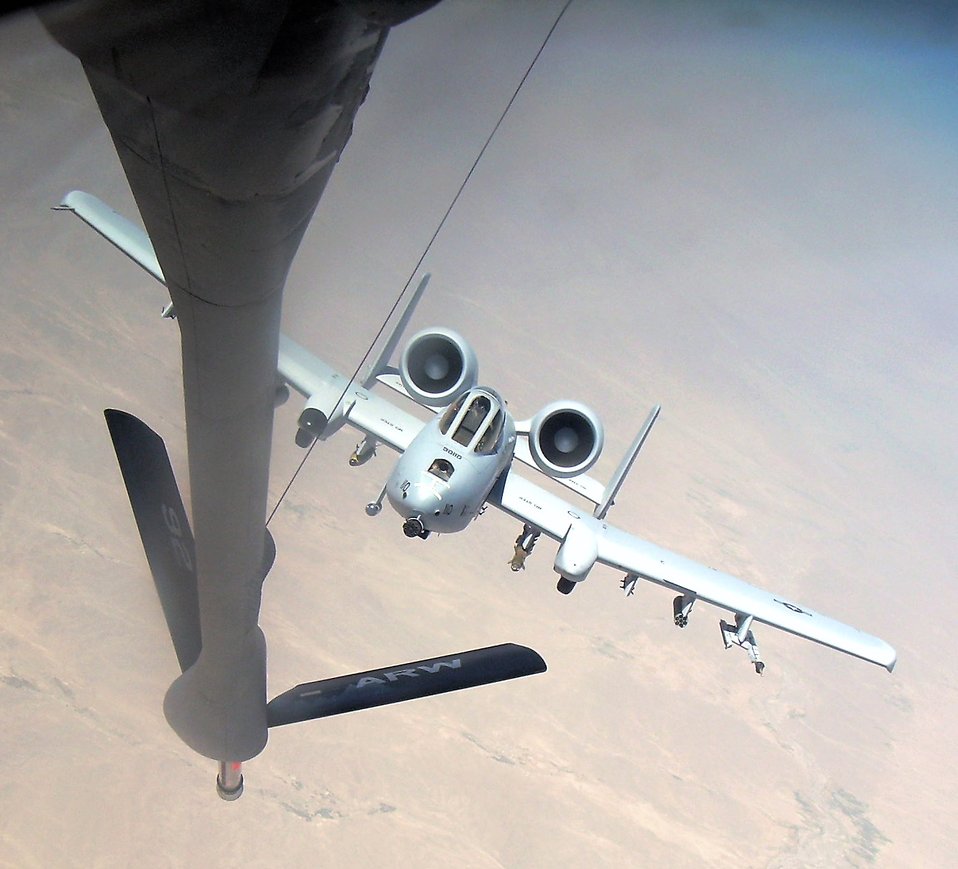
New tanker needed

An A-10 Thunderbolt II moves into position behind a KC-135 Stratotanker on a combat mission over Afghanistan. Air Force officials agree that the nearly 50-year-old KC-135 Stratotanker must be replaced with a newer, more capable aircraft as soon as possible.